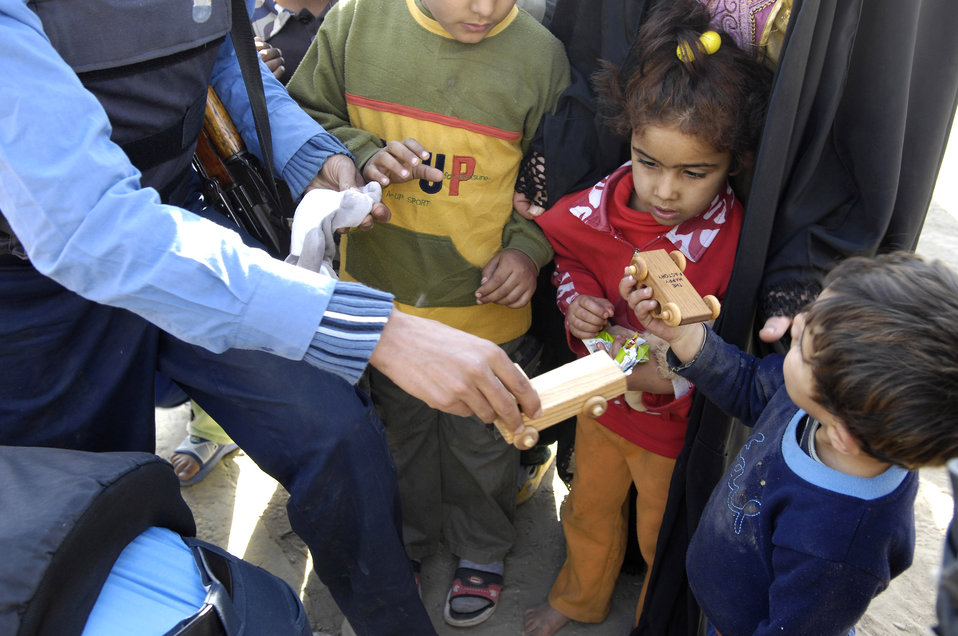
Toys for Iraqi tots

Iraqi police officers hand out toys to local children Dec. 18 during a community relations outreach event with Air Force security forces in Baghdad, Iraq. Security forces Airmen from Det. 3 of the 732nd Expeditionary Security Forces Squadron, attached to the Army's 92nd Military Police Brigade, help train, mentor and coach the Iraqi police to help build a secure and independent Iraq.